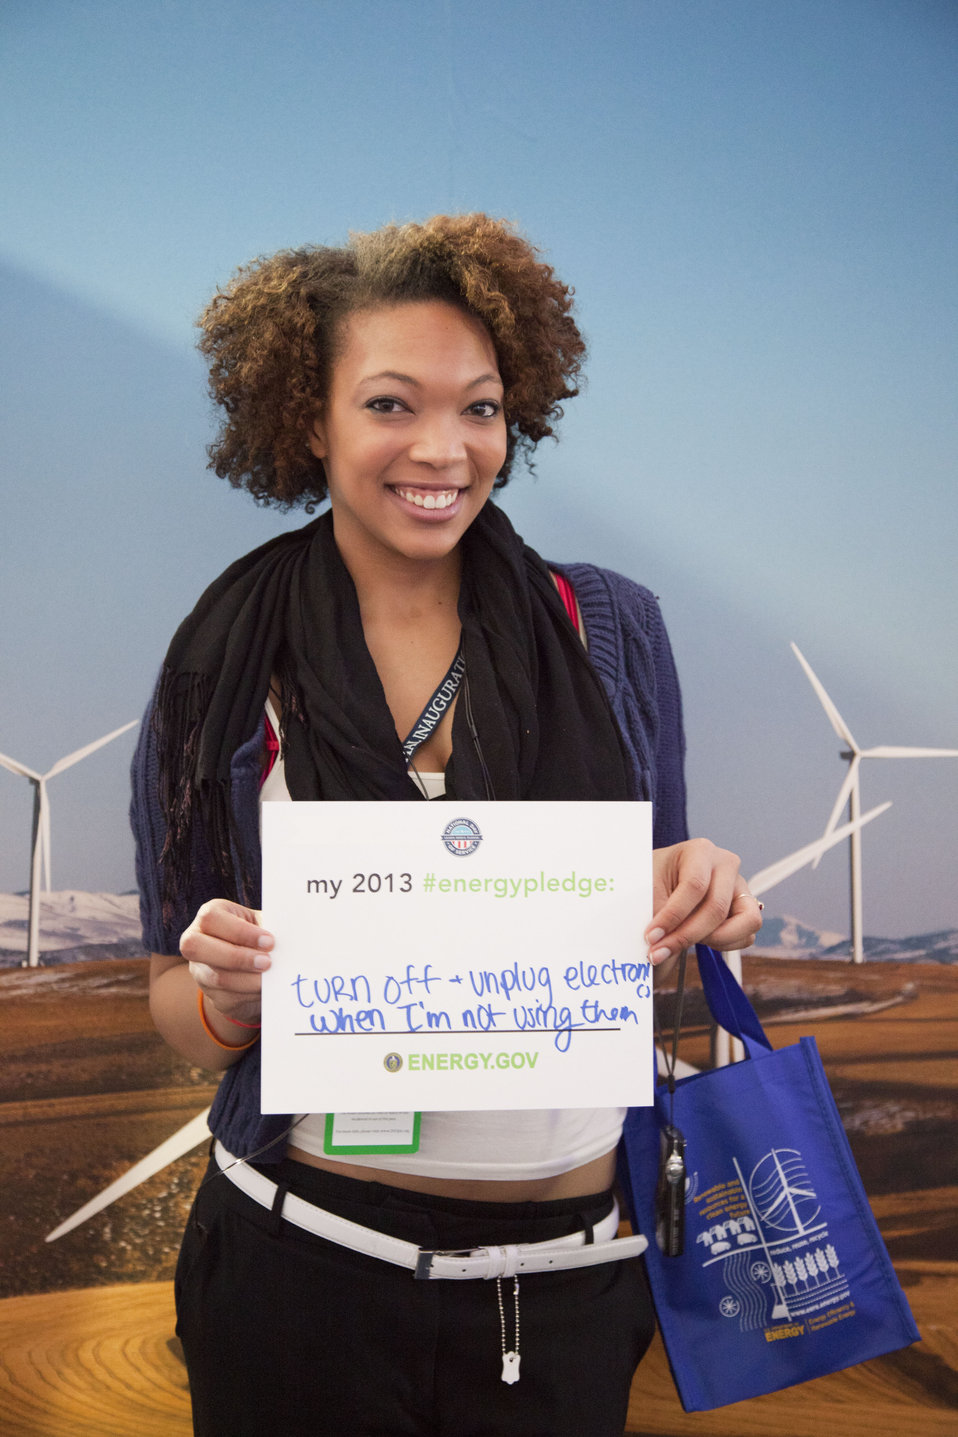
What's your #energypledge?